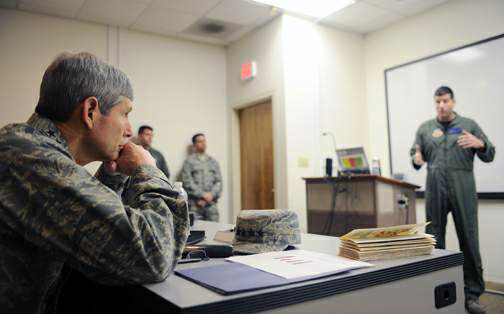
Holloman visit by chief of staff highlights contributions of America's Airmen

Air Force Chief of Staff Gen. Norton Schwartz listens to Lt. Col. Mike Hernandez during an F-22 Raptor briefing Jan. 27, 2010, at Holloman Air Force Base, N.M. General Schwartz visited Holloman AFB to see Airmen and operations firsthand. Colonel Hernandez is the 7th Fighter Squadron commander.